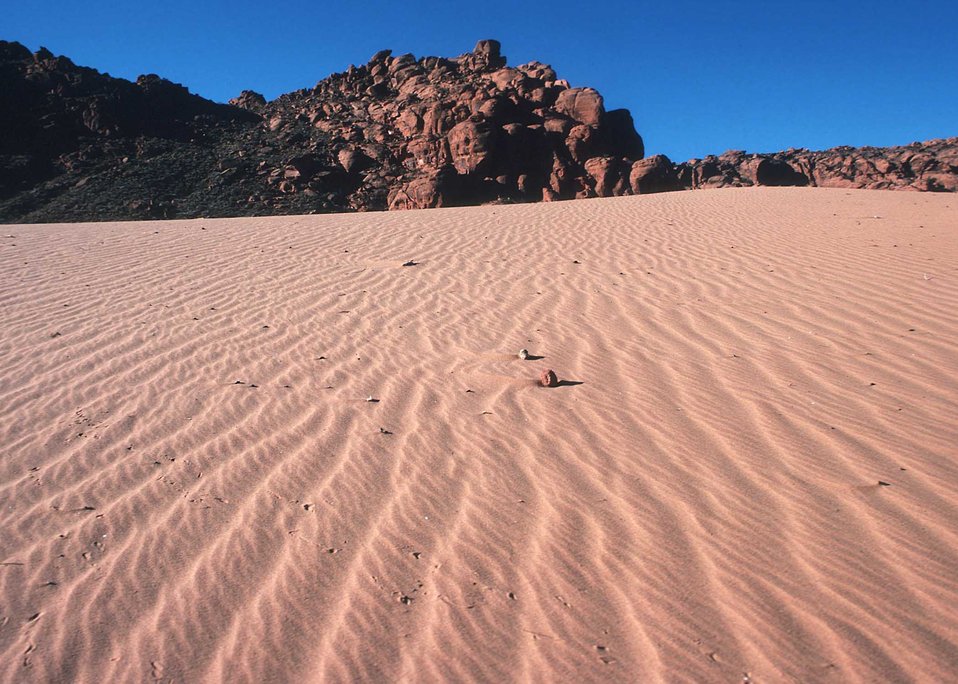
Years of wind erosion have created pink sand dunes in Southern Utah.